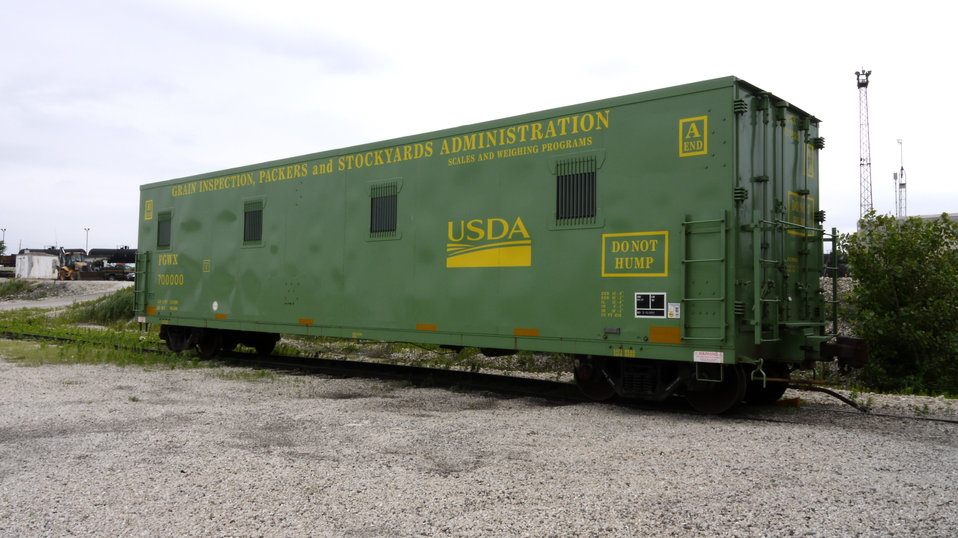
The U.S. Department of Agriculture’s (USDA) Grain Inspection, Packers and Stockyard Administration (GIPSA) uses this FGWX700000 test car unit to calibrate railroad track scales that are used to weigh grain and other agricultural products at the USDA GIPSA Master Scale Depot in Chicago, IL on Jul. 2, 2013. USDA GIPSA entered into an agreement with the National Institute of Standards and Technology (NIST) and the Association of American Railroads (AAR) in 1980 transferring responsibility to USDA’s GIPSA to maintain the Master Scale facility in Chicago, IL and calibrate all the master scales in the continental U.S. annually.